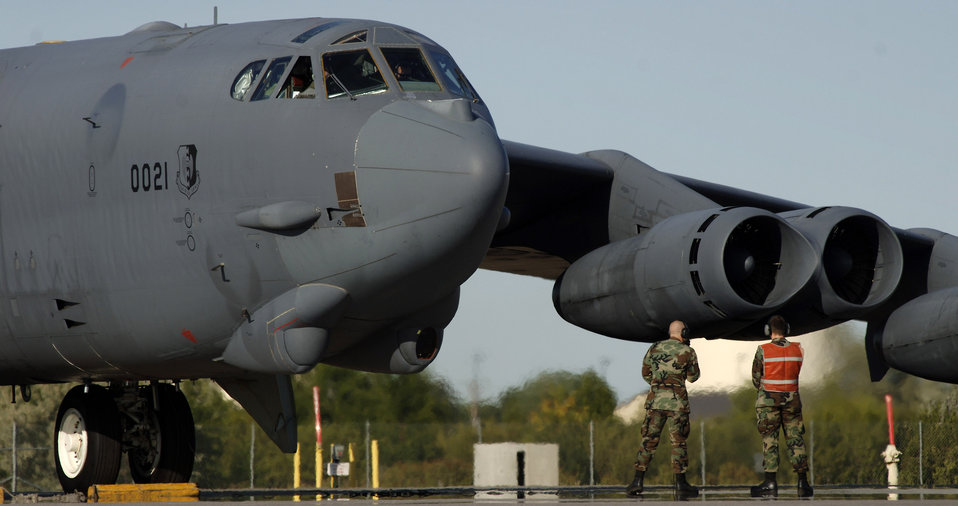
B-52 operations

Senior Airman Nathan Jacobson (left) and Airman 1st Class Tyler Lyght monitor the engine start and run-up of a B-52 Stratofortress at Minot Air Force Base, N.D., Aug. 21. The Airmen are crew chiefs with the 5th Aircraft Maintenance Squadron at Minot AFB.